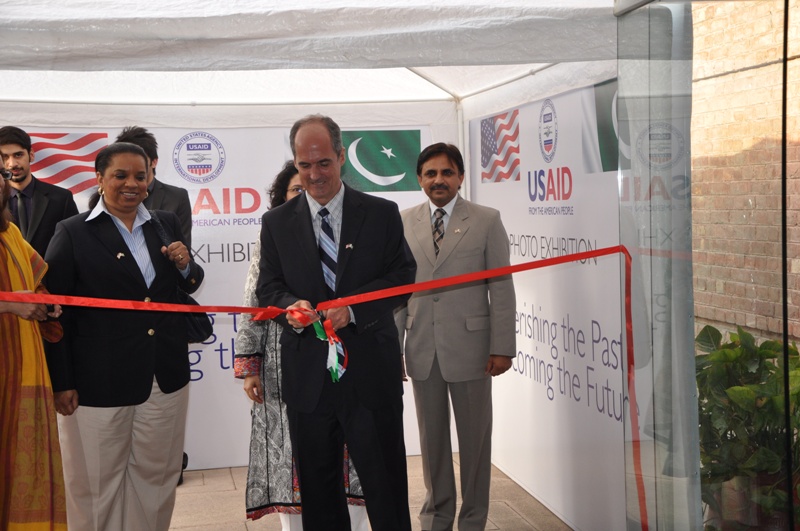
Provinicial Mission Director Ted Gehr cutting the ribbon